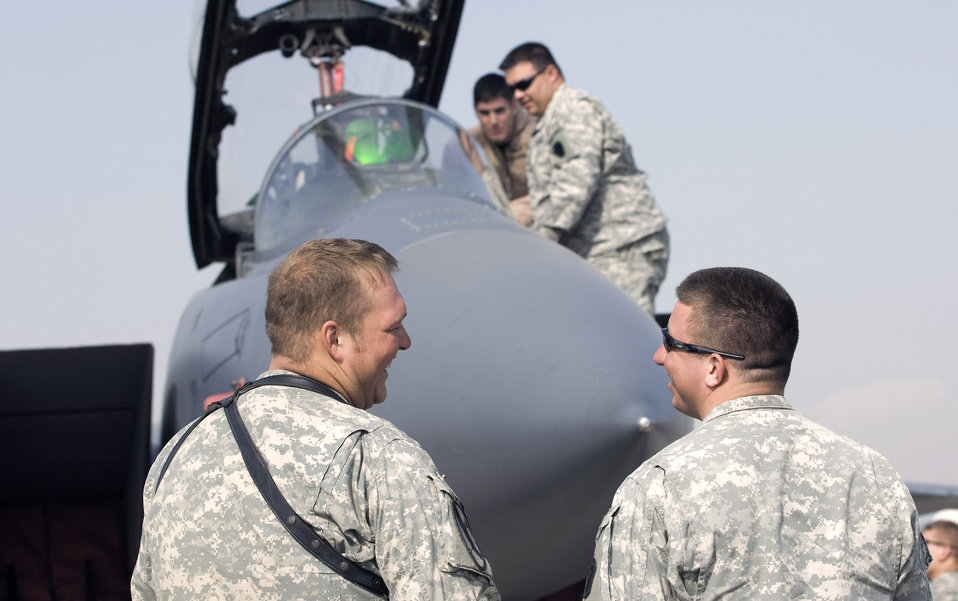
Air support unites Airmen, Soldiers in Afghanistan

Pennsylvania Army National Guard Soldiers take a tour of an F-15E Strike Eagle Oct. 28 at Bagram Airfield, Afghanistan. Members from the 391st Expeditionary Fighter Squadron and the 75th Expeditionary Fighter Squadron hosted the Soldiers who wanted to thank the pilots who protect ground forces with close-air support while engaged in firefights with enemy forces.